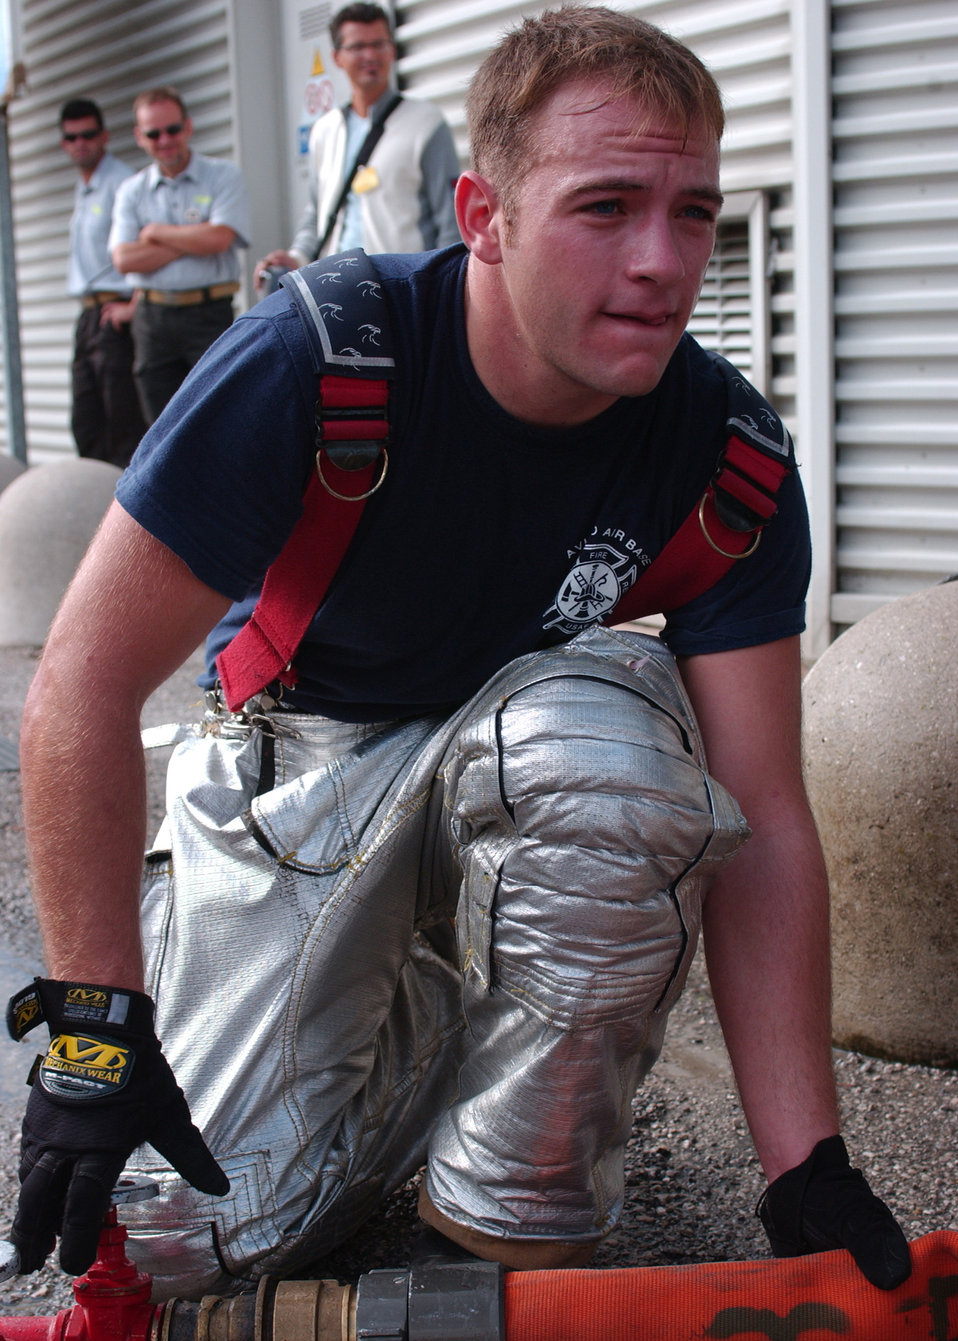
Working together

PIANO, Italy -- Airman 1st Class Brian Wilson prepares the water flow in response to a